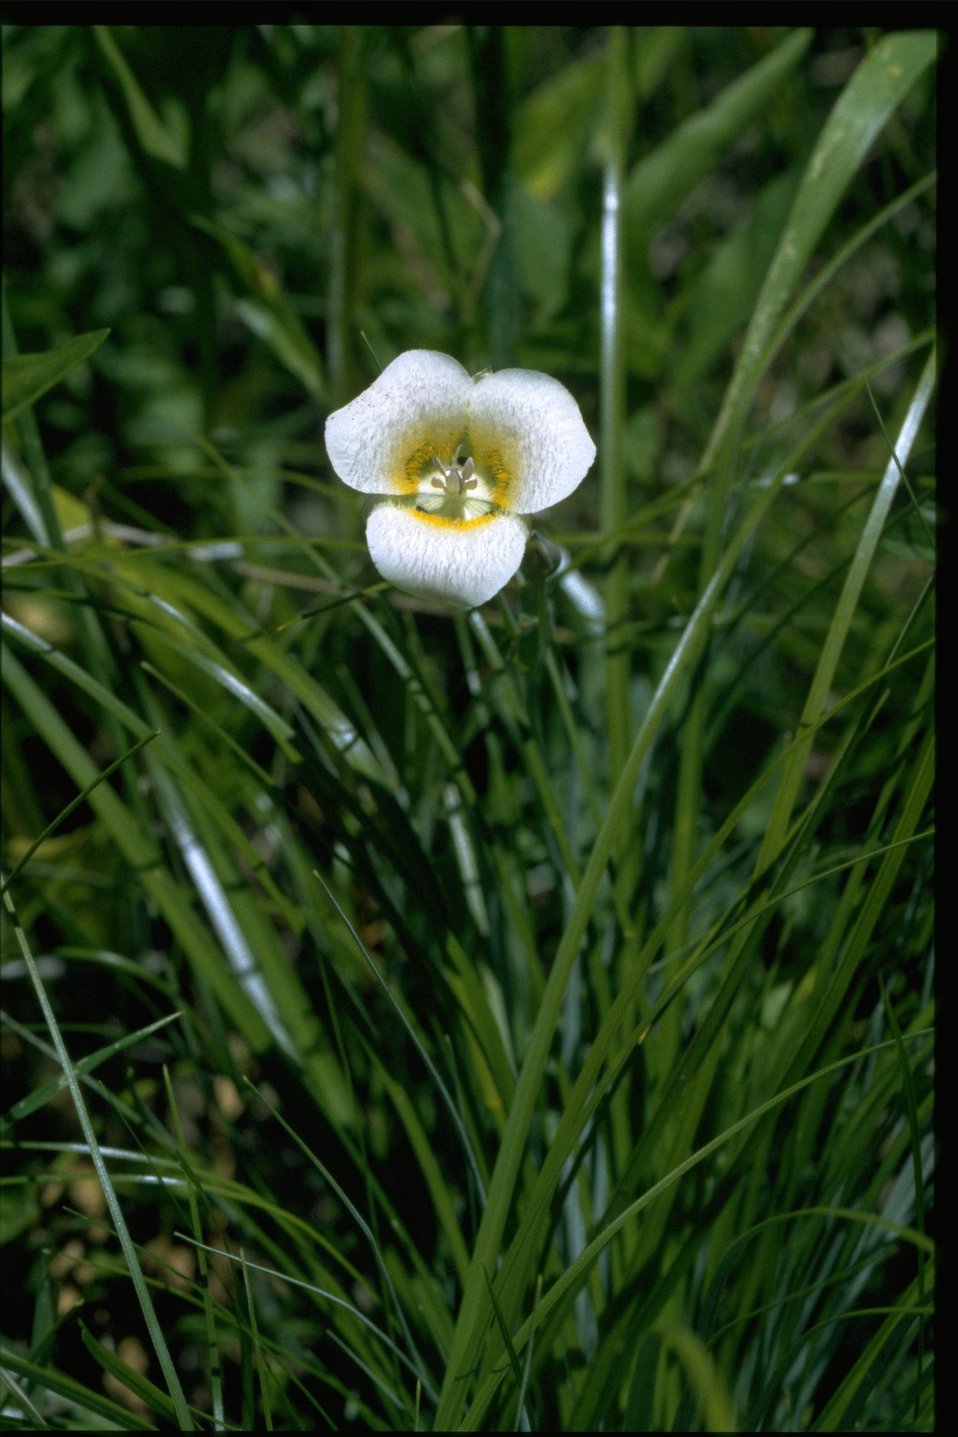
Medium shot of Calochortus subalpinus.